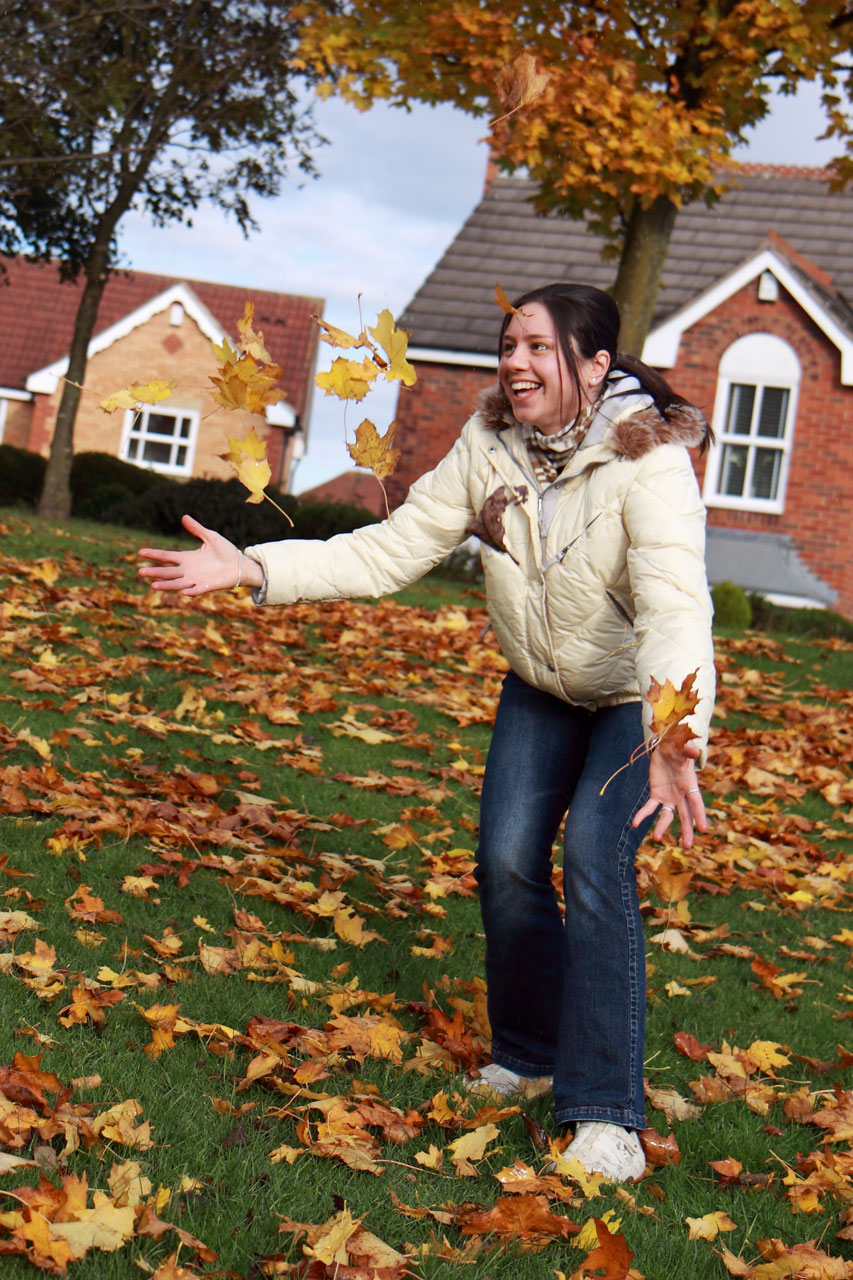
Girl having fun

Girl throwing leaves in the air in autumn.